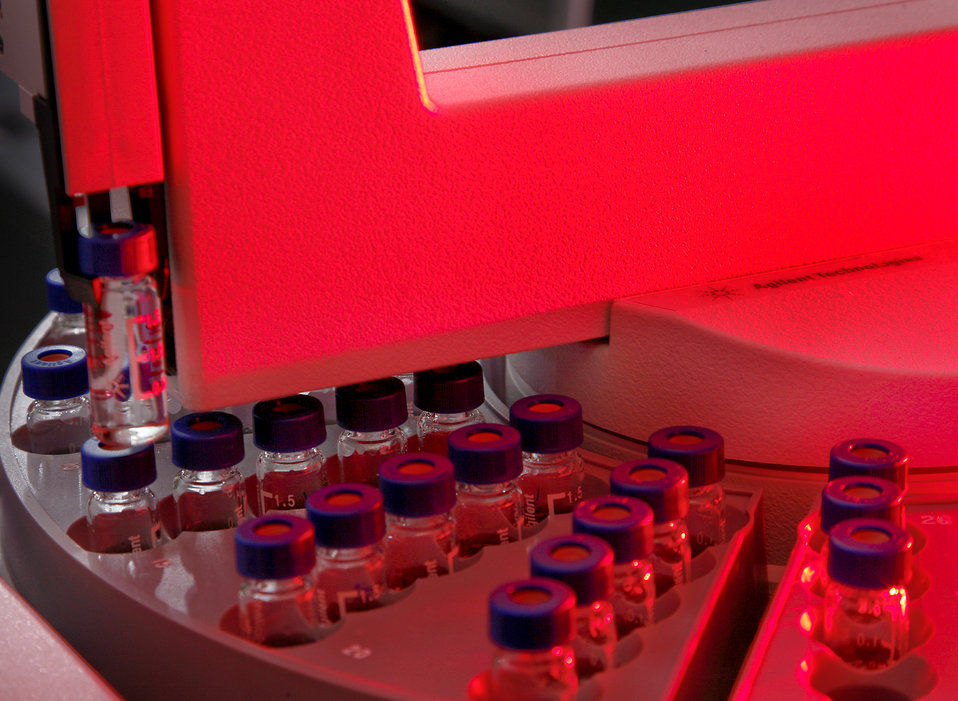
At Oak Ridge National Laboratory, autosampler for gas chromatograph-mass spectrometer that is used for rapid, small molecule analyses to determine the effectors of DNA modification in plant and microbial species.